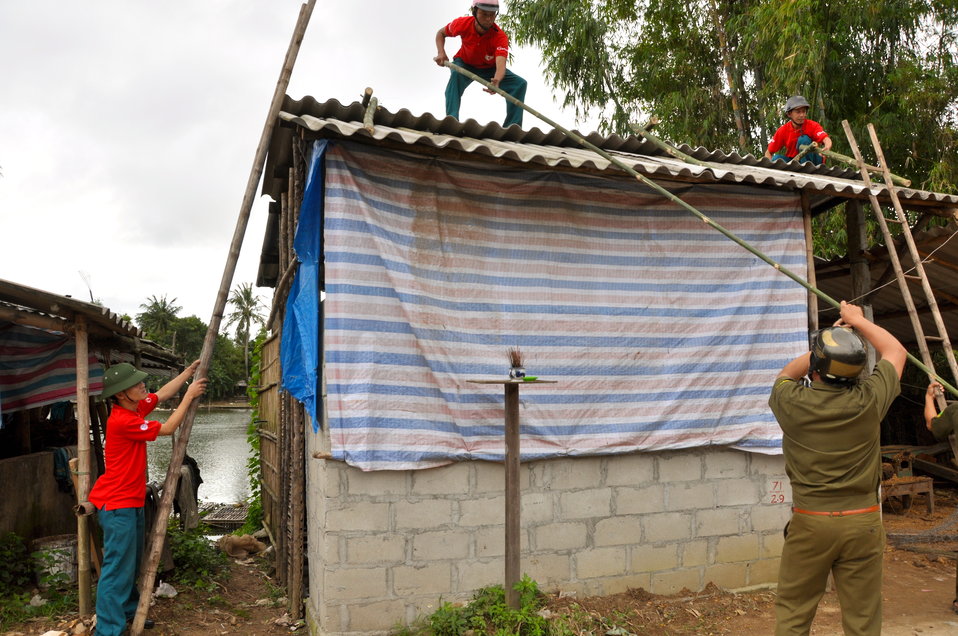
USAID and Save the Children support community evacuation drill and emergency preparedness in central Vietnam

Loc An Commune, Phu Loc District, Thua Thien Hue Province
December 4, 2012, Photo: Richard Nyberg, @USAIDVietnam